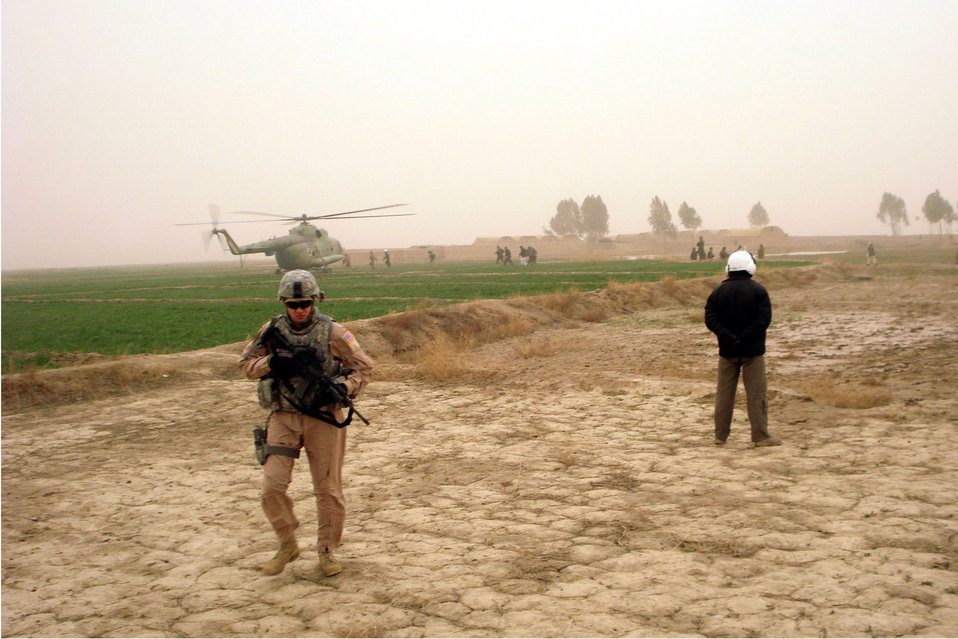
Afghans, Airmen conduct rescue mission following flash flood

U.S. Air Force and Afghan National Army Air Corps servicemembers provide security as members of the nomadic Kuchi tribe are dropped off at a safe location during a humanitarian rescue mission Feb. 8, 2010, in Kandahar, Afghanistan. Their village, located on a sandbar in the middle of a normally otherwise shallow river, was cut off from the mainland as water levels rose approximately 20 feet deep.